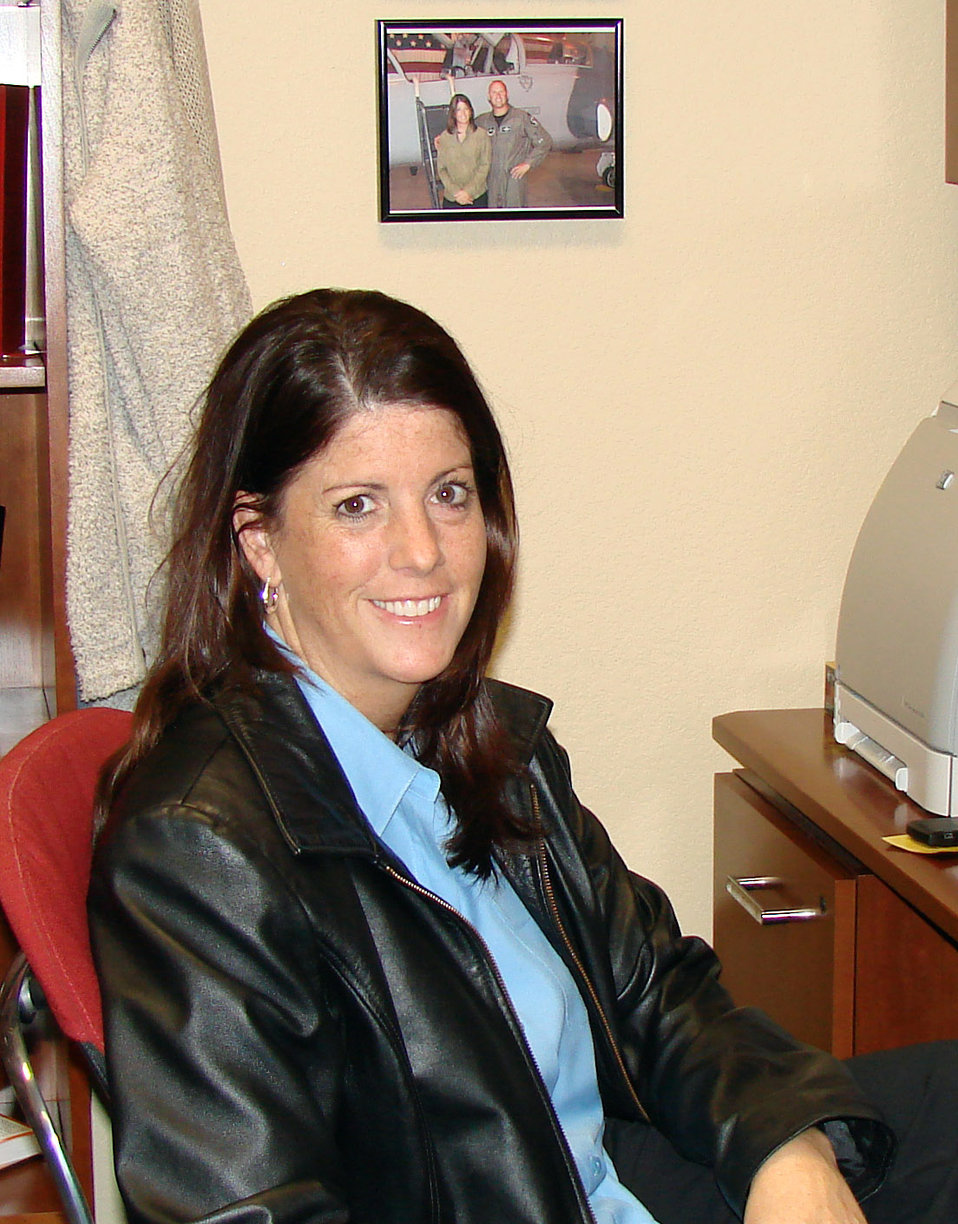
Vance member saves life

Patty Tyson sits at here desk where she serves as a community services director at Vance Air Force Base, Okla. She saved the life of a choking woman at a local restaurant on her lunch break March 6.